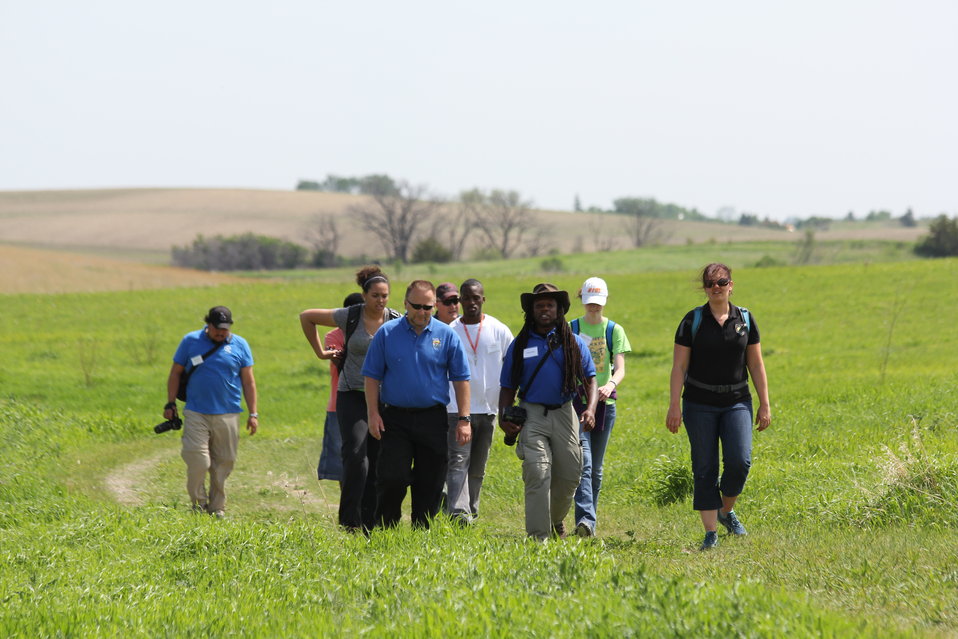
CDIP 2012 Fergus Falls

CDIPs and mentors, returning from Environmental Education Day w/ 4th Grade